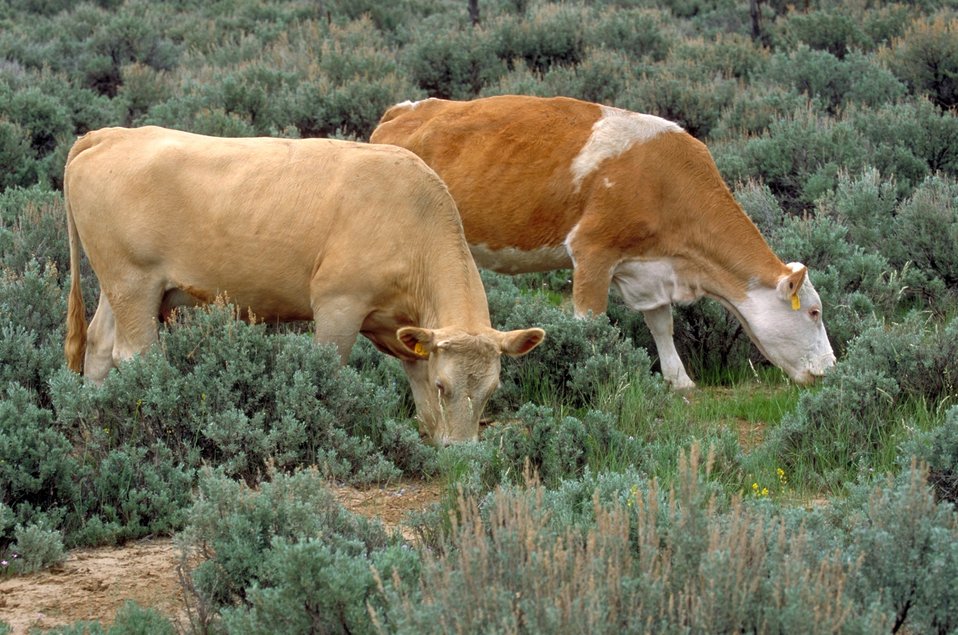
Livestock grazing on BLM lands near Price, Utah.